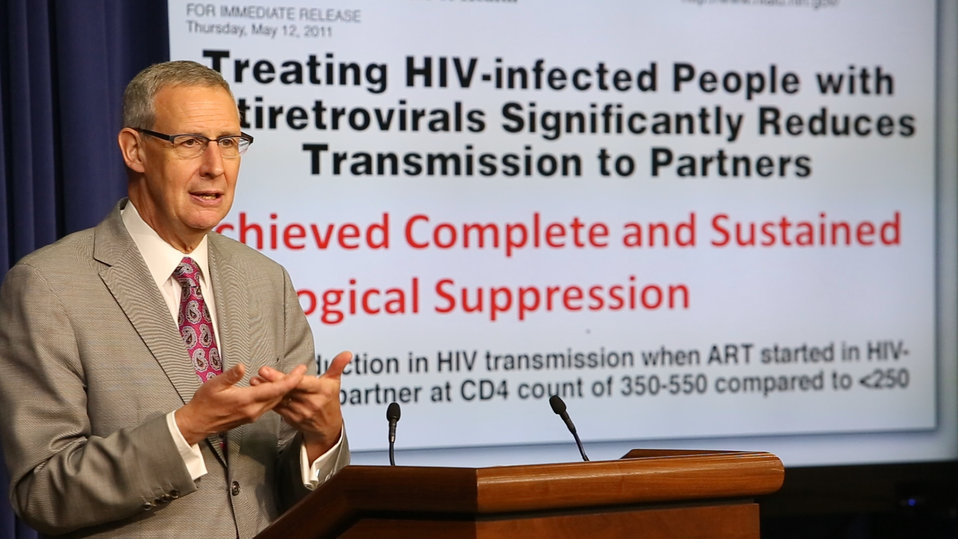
MVI 0180.MOV.Still003